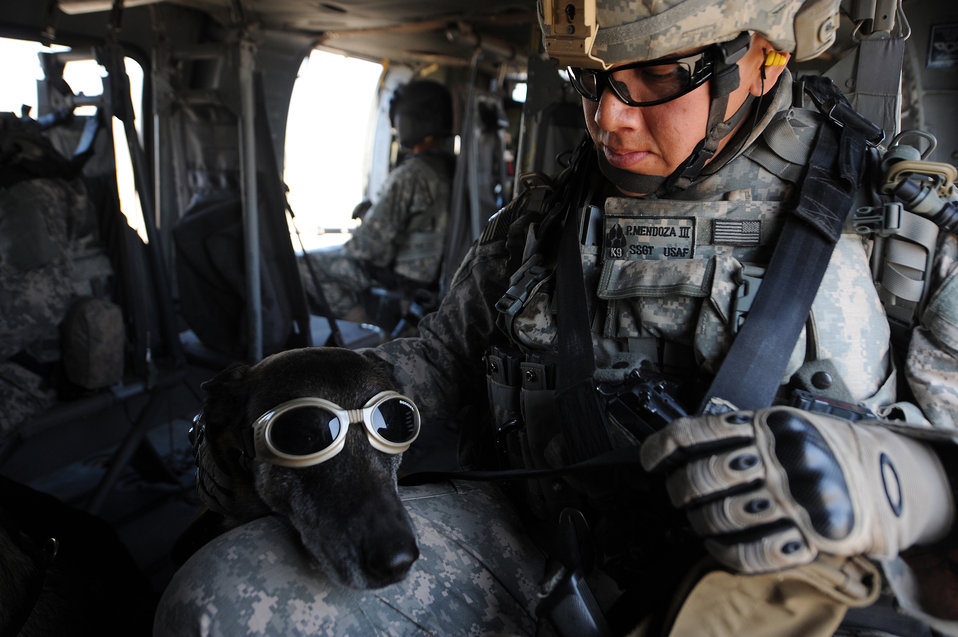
Man's best friend

Staff Sgt. Philip Mendoza pets his military working dog, Rico, wearing